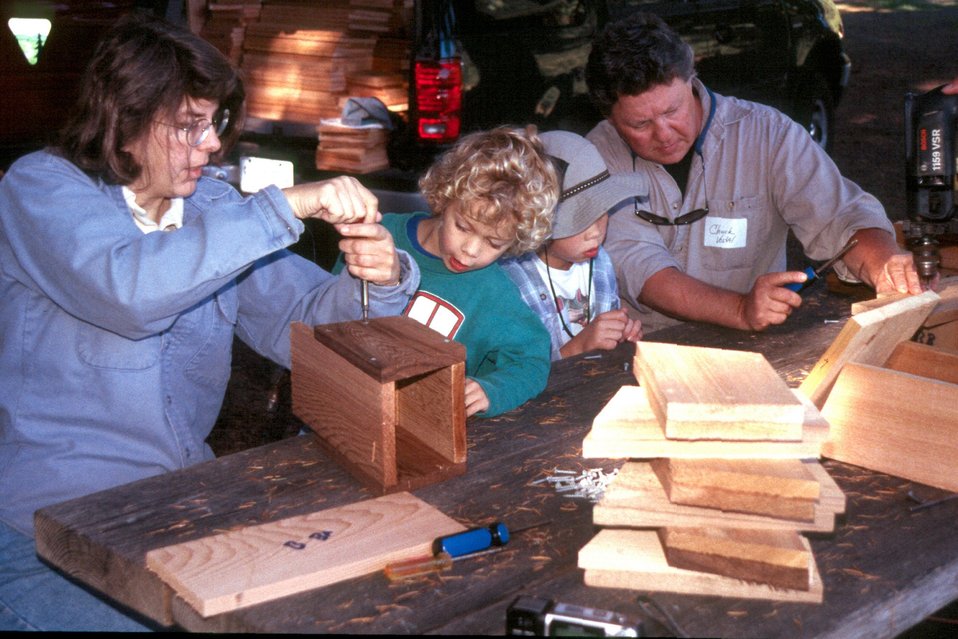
Volunteers Allison, Reid, and Triston Center with BLM employee Chuck Vostal assemble bird boxes